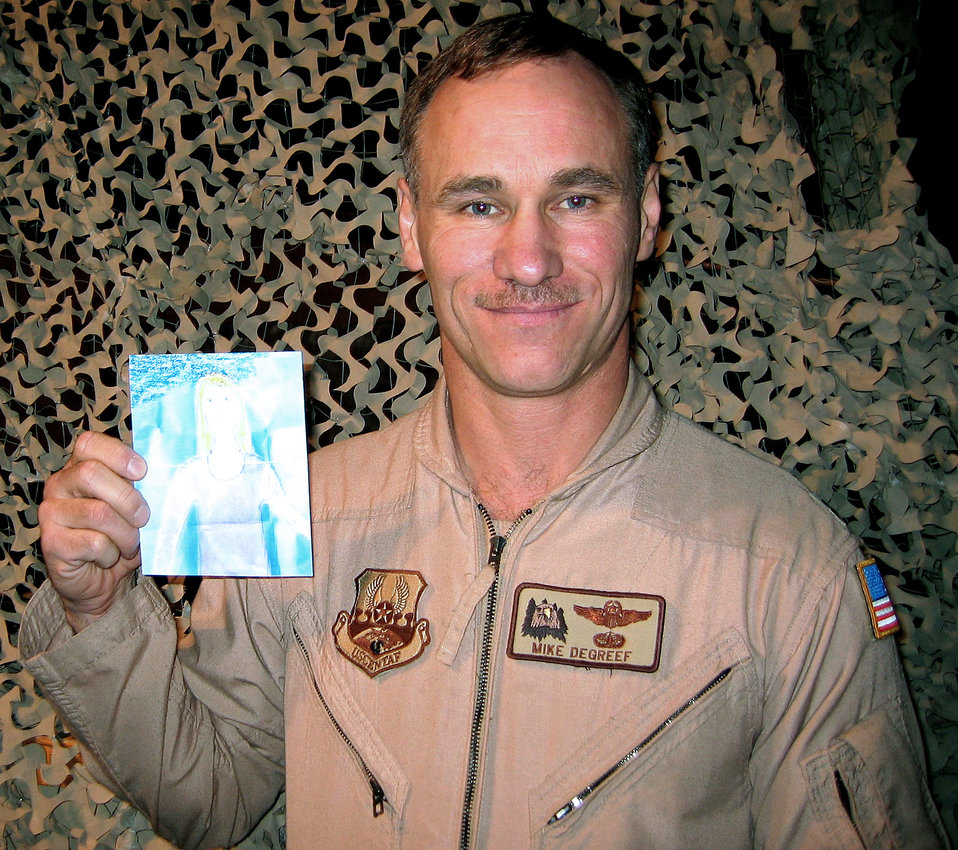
Dad travels world with 'Mini Alyssa'

MANAS AIR BASE, Kyrgyzstan -- Lt. Col. Mike DeGreef poses with his well-traveled